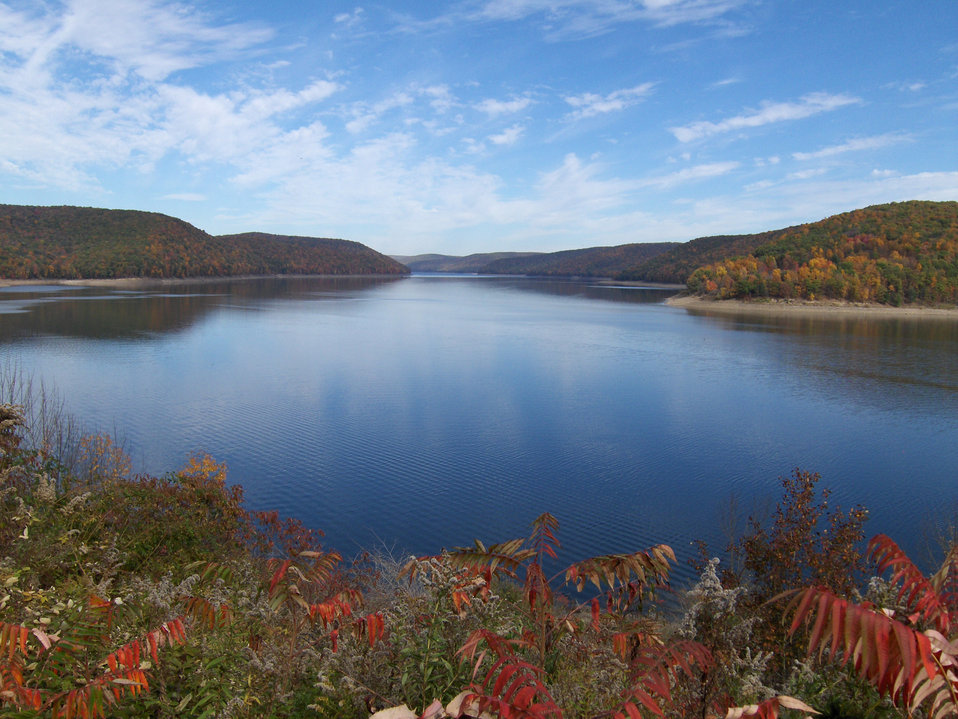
Fall Colors on the Allegheny Resevoir on th Bradford Ranger District on the Allegheny National Forest in Pennslyvania. The U.S. Forest Service (FS) has a Forest Service 2012 Fall Colors Website and a toll-free Fall Colors Hotline at 1-800-354-4595 that will help visitors plan their trip to catch the colors at their peaks.